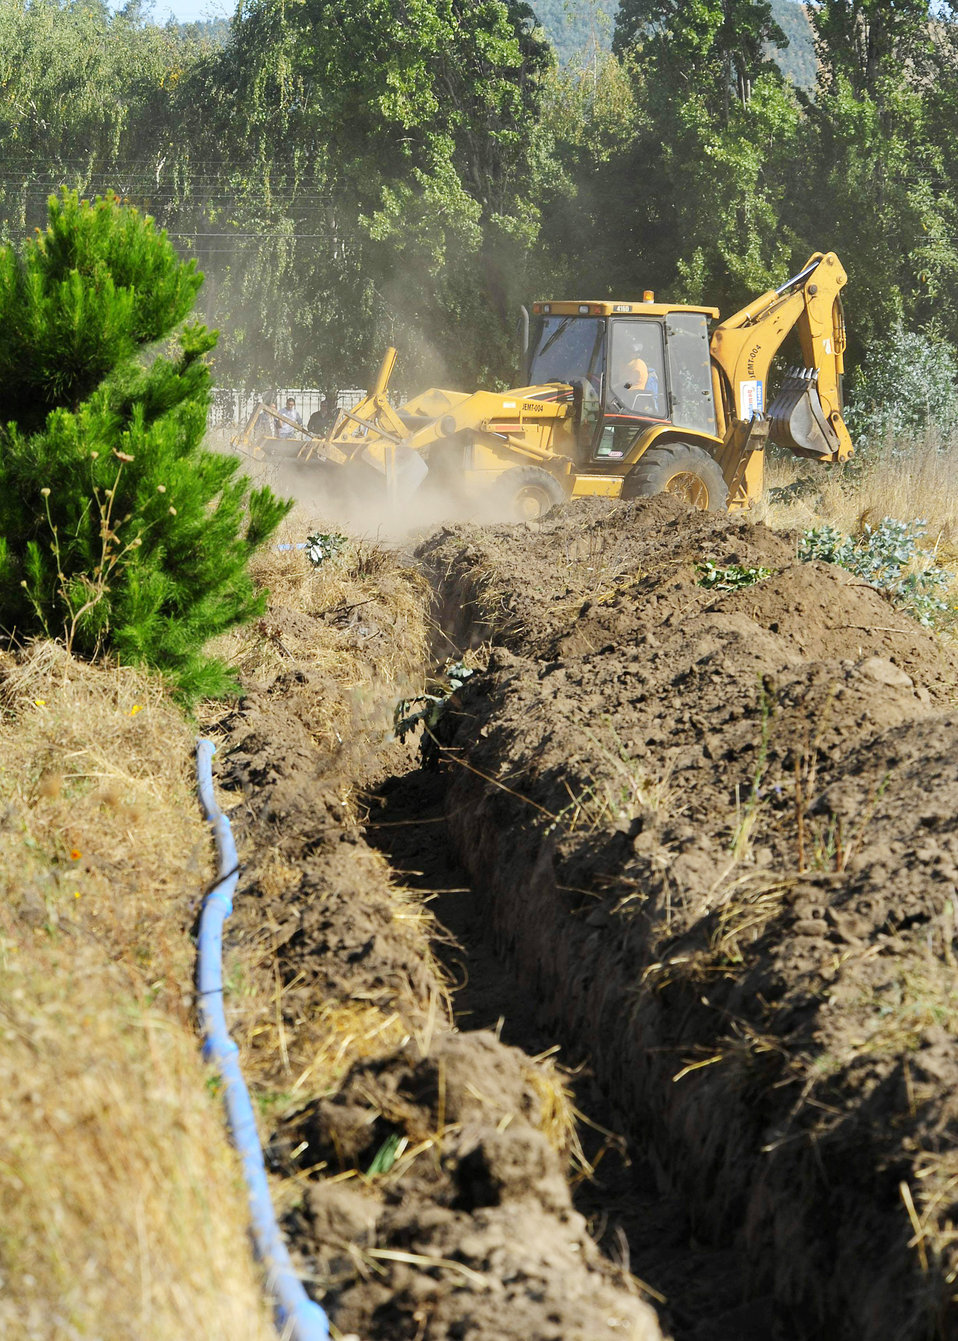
Airmen build hospital in Chile

Chilean construction workers use a backhoe to cover the water pipes laid just three days ago March 10, 2010, in Angol, Chile. Chileans laid water and electrical pipes that will lead to the Air Force Expeditionary Medical Support site.